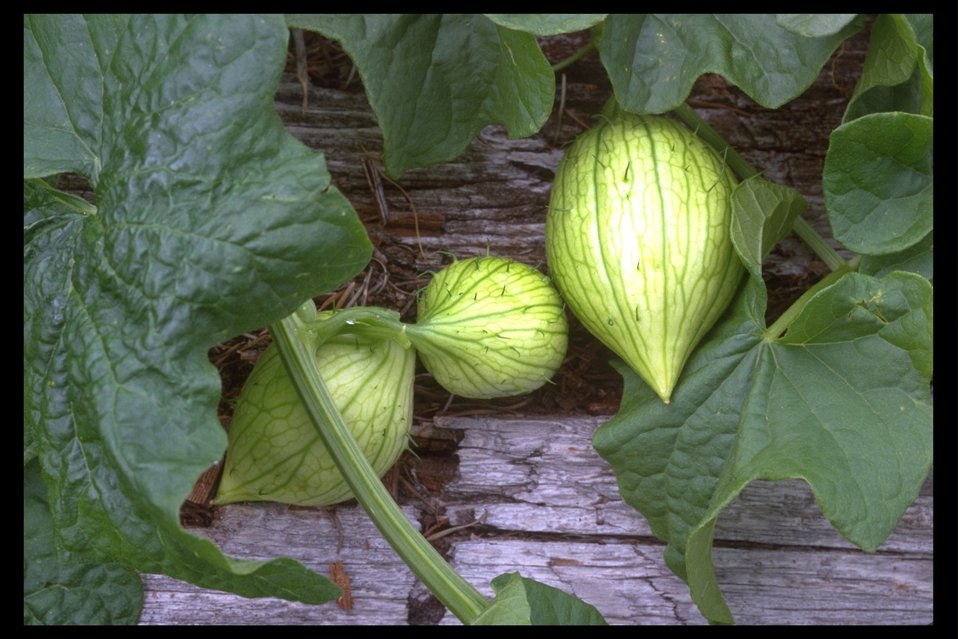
Wild Cucumber, also called the Coast Manroot, (Marah oreganus) found at Shady Cove near the Rogue River. Close up of the fruit.